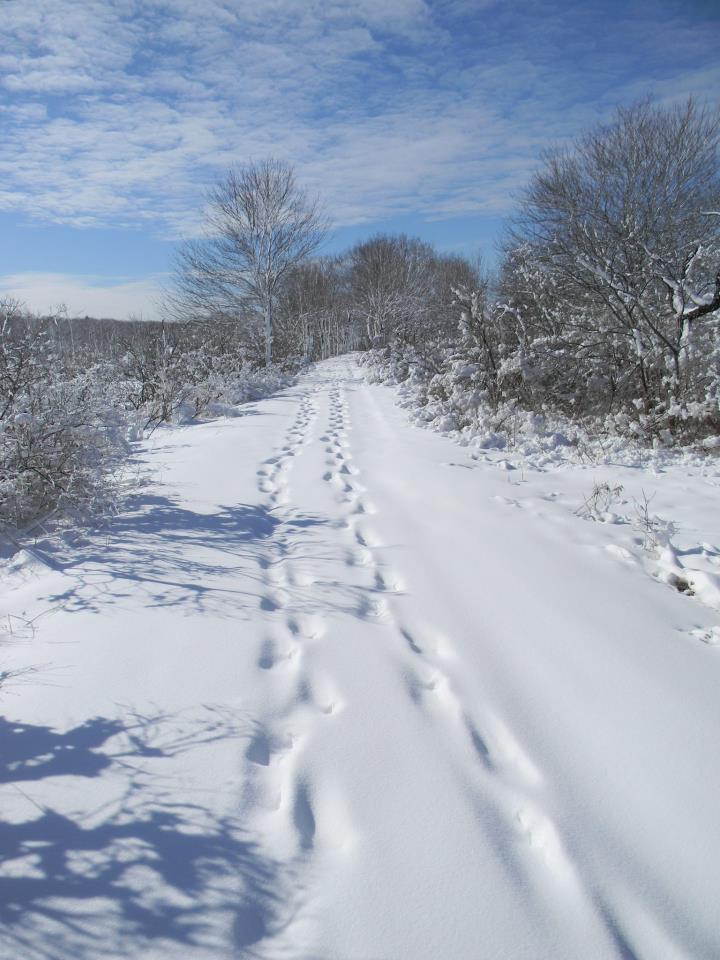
Tracks

Winter scene, Rachel Carson National Wildlife Refuge, ME.